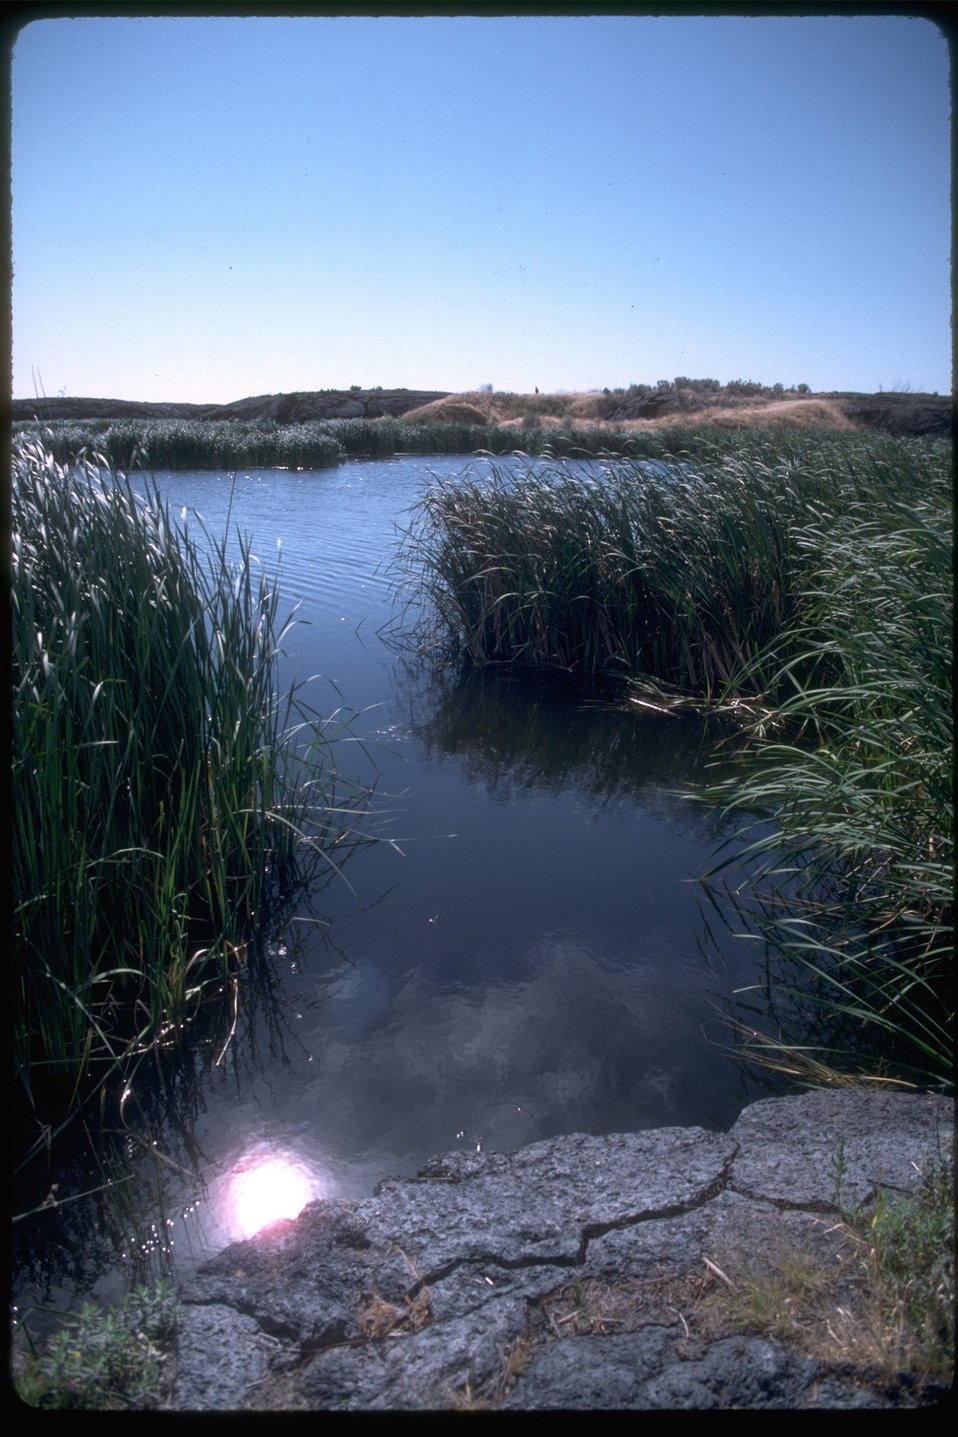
Along the shoreline of Batch Lake in the Jordan Craters Wilderness Study Area. OR 3-128